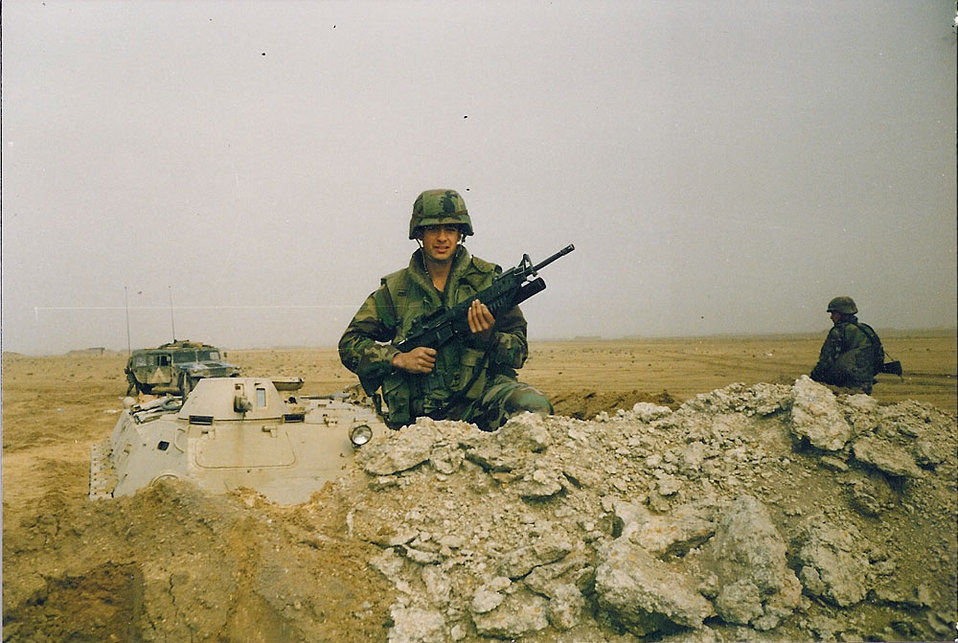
Damian Martelli-Northeast Region

Damian Martelli began his military career in 1990, joining the U.S. Army and serving in Operation Desert Storm while being stationed in Germany. From 1997 to 2010 Martelli served with the Air National Guard/Air Force Reserve and participated in a number of operations. In September 2011 Martelli became a Wildlife Inspector with the U.S. Fish and Wildlife Service and currently works in the Office of Law Enforcement in Amherst, NY. “When I joined the Army in 1990 and later the Air Force in 1997, it was awe-inspiring to know I belonged to something great with a long legacy of distinguished service to the United States. The same holds true in my service as a Wildlife Inspector: that I belong to a great organization which performs a unique mission in support of our country,” says Martelli as he reflects positively on these life experiences.